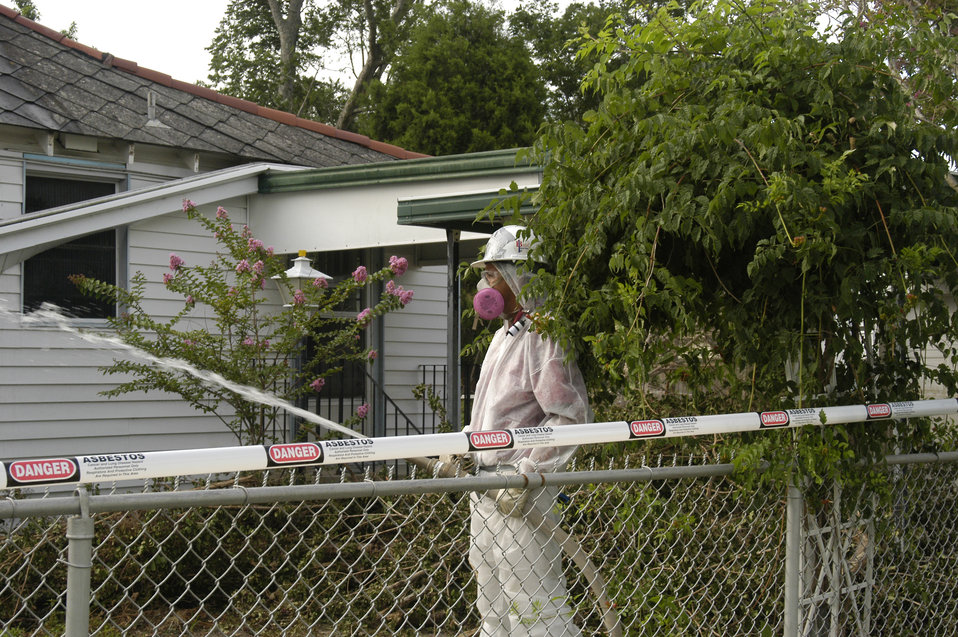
Many of the older homes and buildings in the New Orleans, LA, locale that were destroyed by Hurricane Katrina contained asbestos material (i.e. asbestos roofing tiles, transite siding, insulation, floor tiles, and popcorn ceilings). The U.S. Army Corps of Engineers (USACE) was mandated to follow strict environmental protocols in the demolition of these homes that were designated Regulated Asbestos Containing Material (RACM) demolitions. Prior to and during the demolition of the RACM house, water was constantly sprayed onto the building to prevent the asbestos containing material from becoming “friable” (airborne).